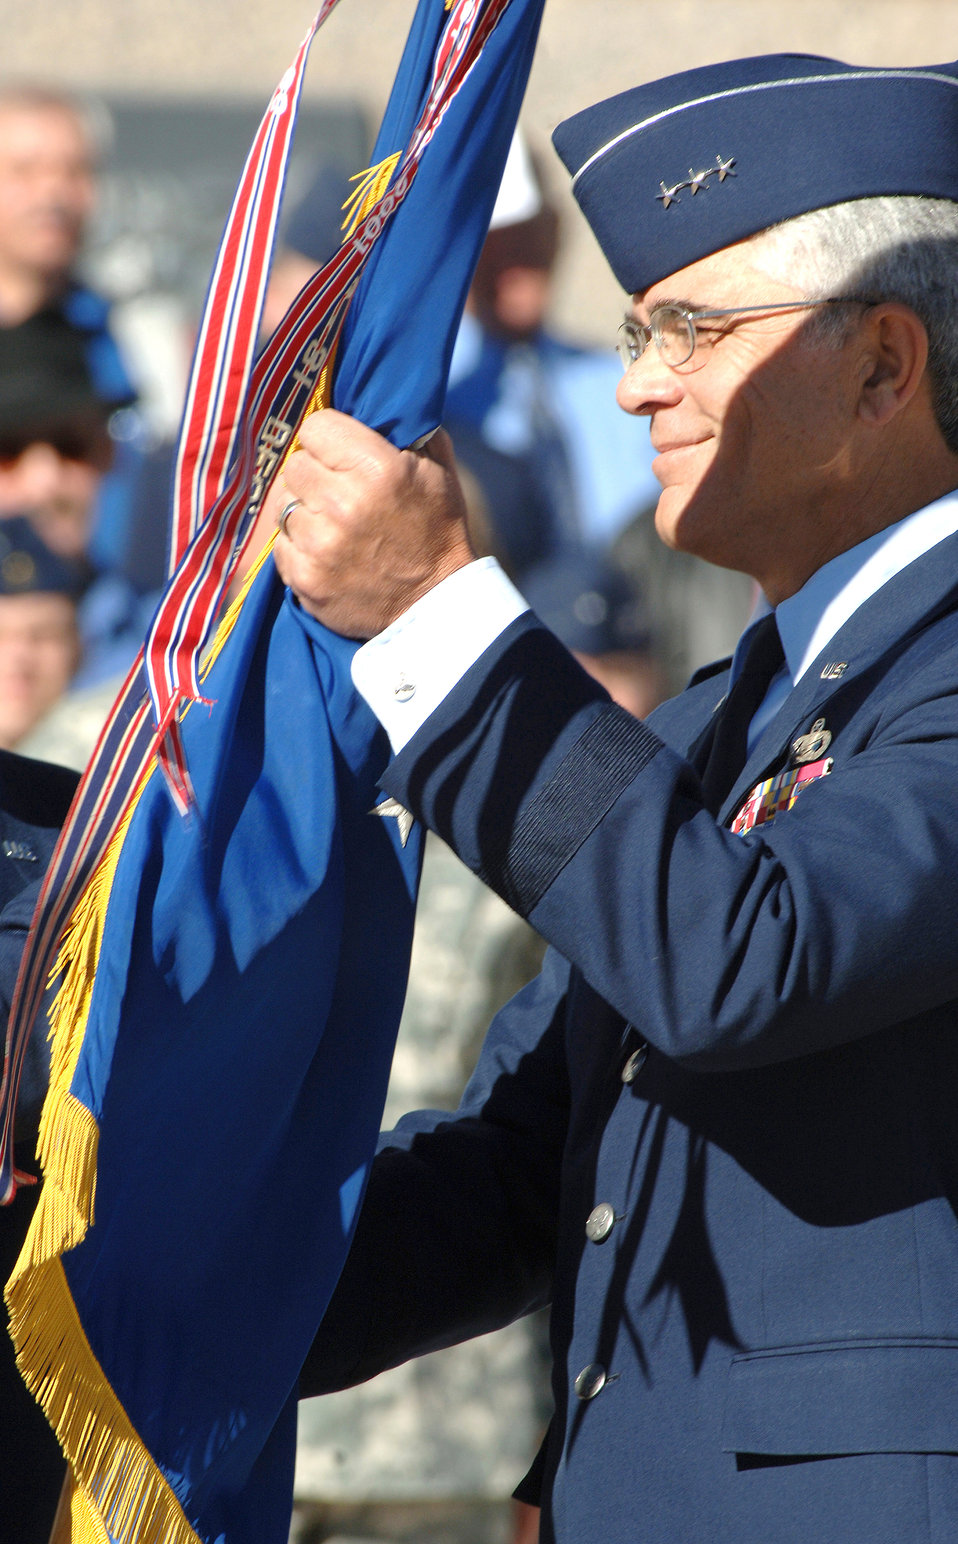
Academy superintendent

U.S. AIR FORCE ACADEMY, Colo. (AFPN) -- Lt. Gen. John F. Regni -- a 1973 academy graduate -- became the 17th superintendent here Oct. 24.